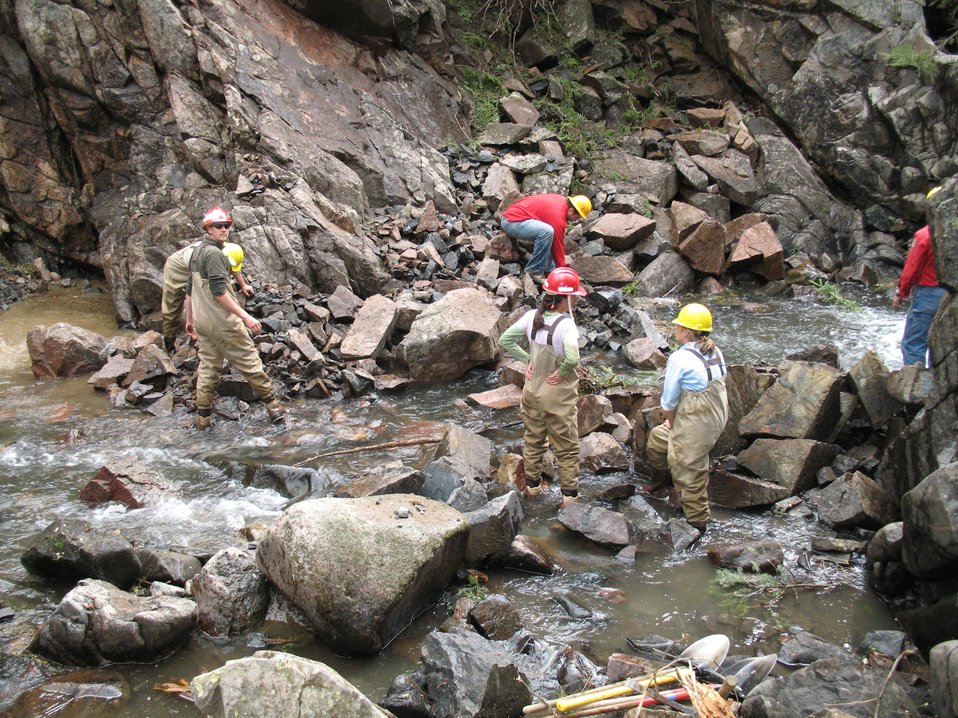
Improving the North Fork Little Snake River

Colorado Fish & Wildlife Conservation Office worked with the US Forest Service and State partners to modify a waterfall on the North Fork Little Snake River to prevent non-native rainbow trout from moving upstream and competing with native Colorado River cutthroats.